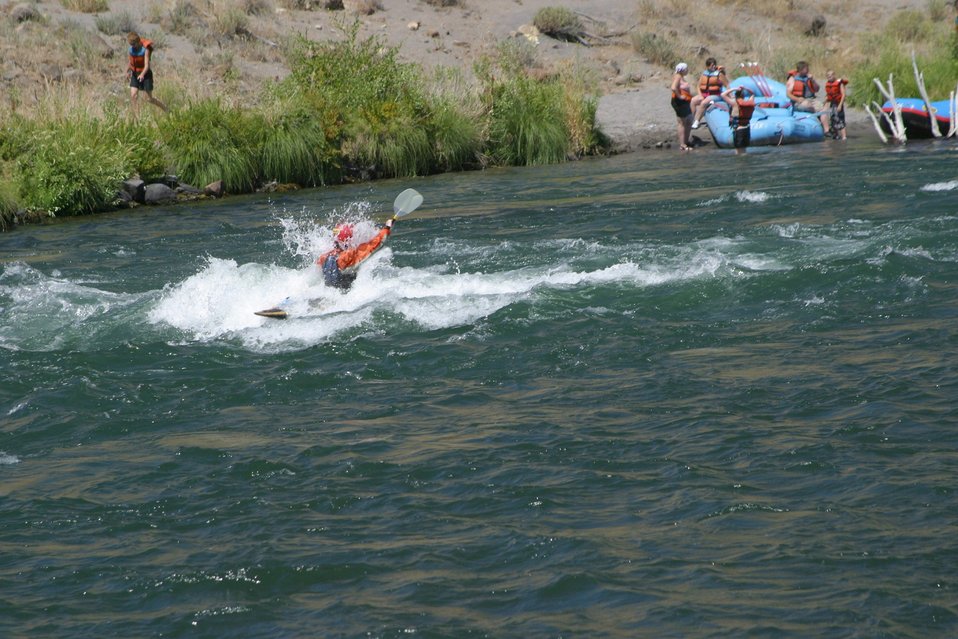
Elevator Rapids near Mile 46 on the Lower Deshcutes River. 7/26/03 Pelton Dam 3600 cfs: Moody Rapids 4300 cfs.